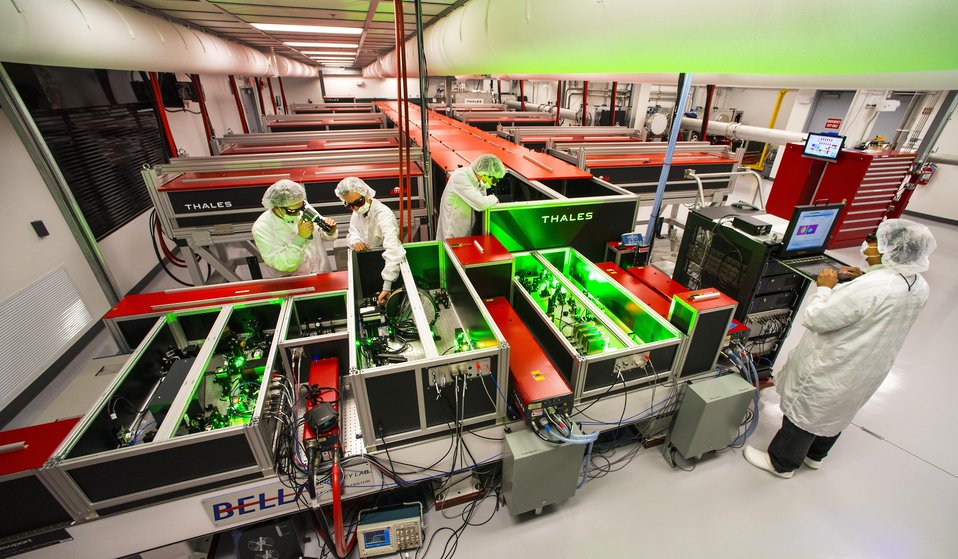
BELLA, the Berkeley Laboratory Laser Accelerator will create an experimental facility for further advancing the development of laser-driven acceleration.

BELLA's unique attribute is the ability to use laser light to accelerate an electron beam to 10 GeV (10 billion electron volts) or more in the comparatively short distance of approximately one meter.